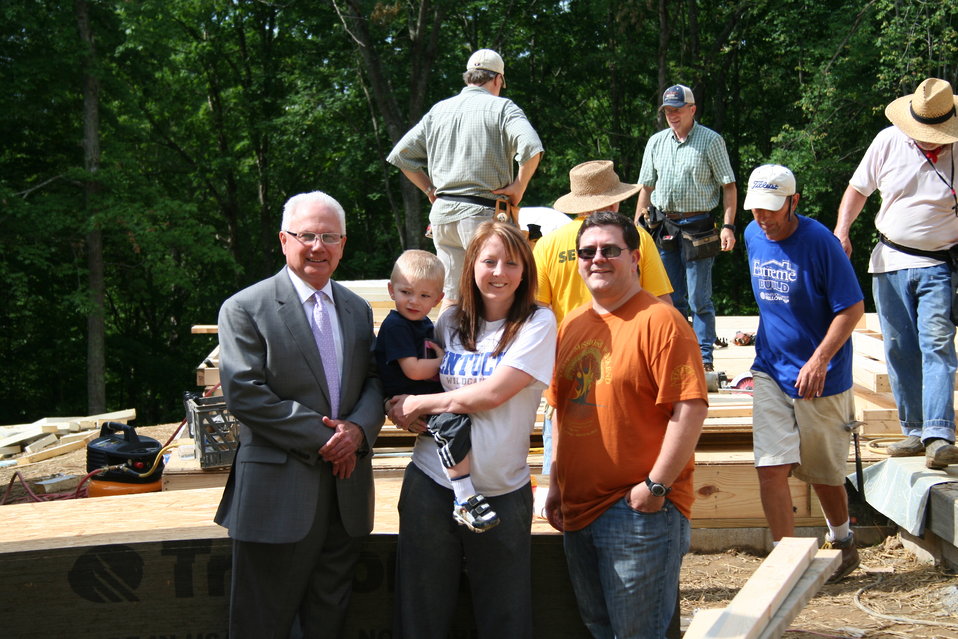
U.S. Department of Agriculture (USDA) Rural Development (RD) Kentucky State Director Thomas Fern, Shawna Barnett with her son Easton, and Kentucky Baptist Fellowship Josh Speight stand in front of the Barnett’s new home being built by volunteer builders. The U.S. Department of Agriculture’s (USDA) Rural Development (RD) in partnership with the Kentucky Baptist Fellowship and Kentucky Highlands Investment Corporation’s Southern Tier Housing provided funding for the construction of a home for the Barnett family.